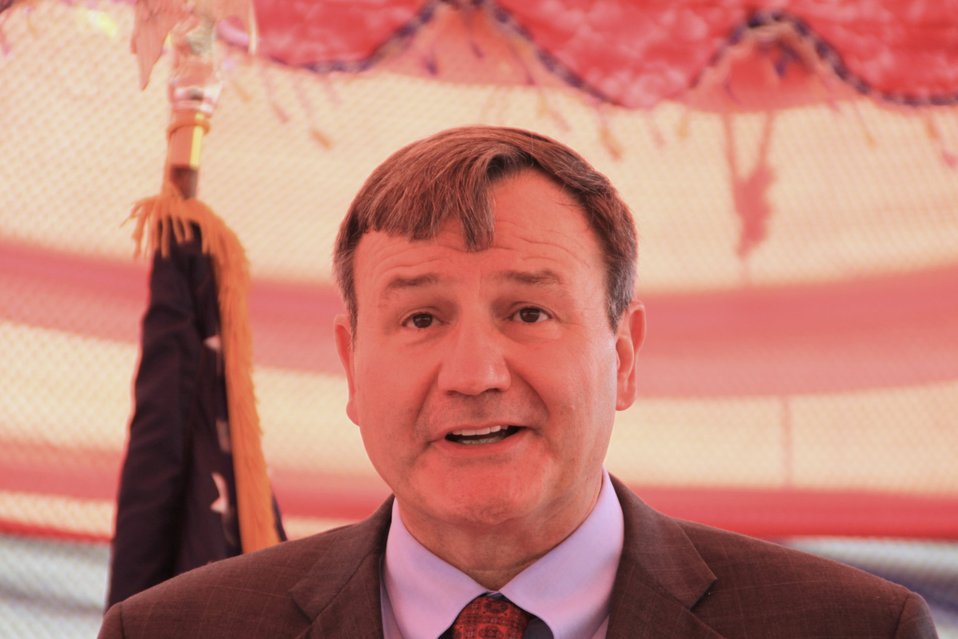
Badam Bagh Farm